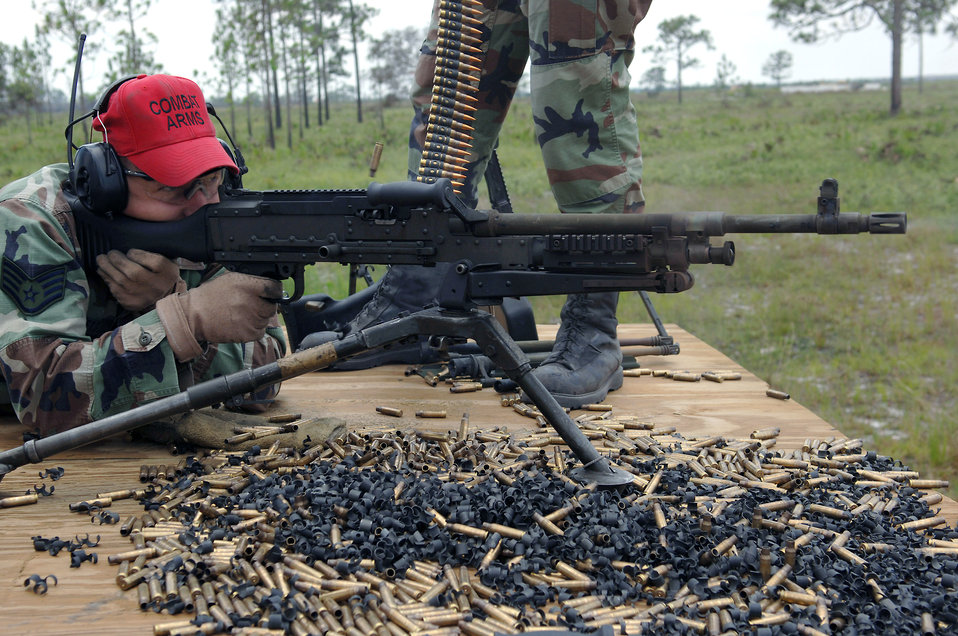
Combat arms training

Staff Sgt. Harley Teets fires an M240B medium machine gun during a combat arms training and maintenance class at Avon Park Air Force Range, Fla., on Thursday, May 18, 2006. Sergeant Teets is a CATM instructor at the range. Security forces Airmen from the 6th Security Forces Squadron at MacDill Air Force Base, Fla., were at the range to train for upcoming deployments.